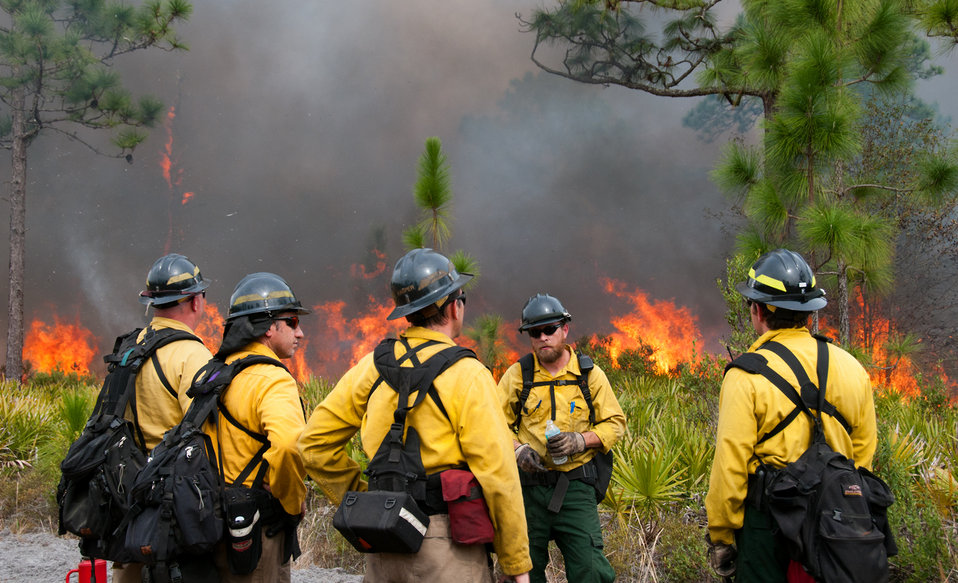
Lake Woodruff Volusia 5 Prescribed Fire Febuary 2014

USFWS firefighters discuss firing patterns and tactics while waiting for a pocket of unburned vegetation to finish burning. On February, 12 2014 USFWS firefighters conducted a 137 acre prescribed fire at Lake Woodruff NWR to reduce the wildfire risk and enhance the wildlife habitat on the southern end of the refuge.